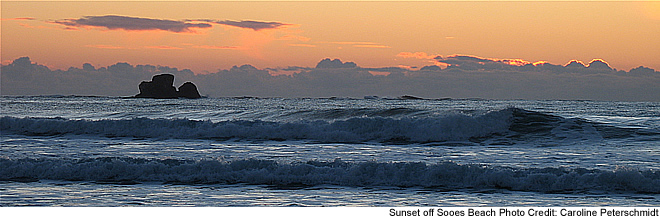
Sunset off Sooes Beach - Quillayute Needles NWR

Quillayute Needles consists of 870 coastal rocks and reefs along 100 miles of the northern Washington coast.